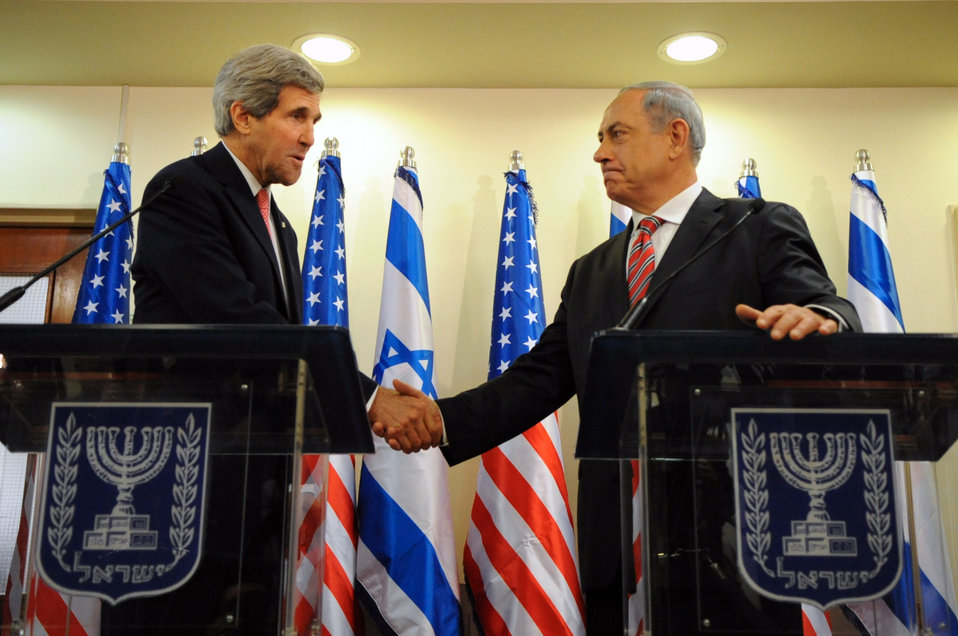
Secretary Kerry Shakes Hands With Israeli Prime Minister Netanyahu

U.S. Secretary of State John Kerry and Israeli Prime Minister Benjamin Netanyahu shake hands amid a news conference in Jerusalem on December 5, 2013.